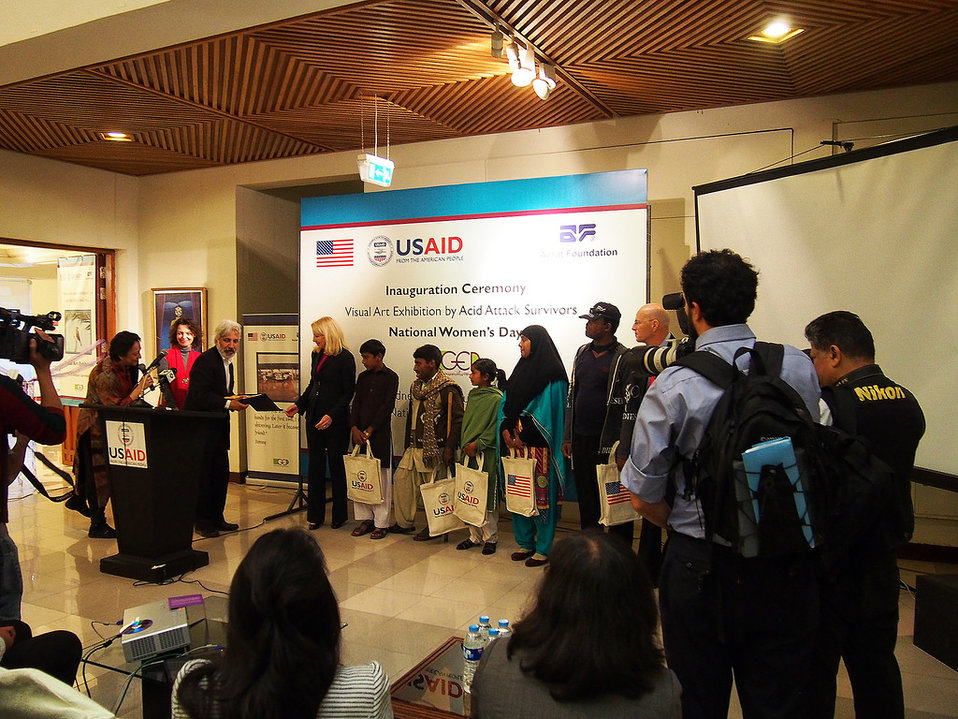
Catherine Russell, U.S. Ambassador-at-Large for Global Women's Issues, with acid attack survivors at a photography exhibition at Pakistan National Council of the Arts in Islamabad on February 12, 2014.

The event was sponsored by USAID and its partner, the Aurat Foundation, which implements the Gender Equity Program (GEP), a program focused on addressing women’s access to justice. The photographers are beneficiaries of the Acid Survivors Foundation (ASF), a GEP grantee.